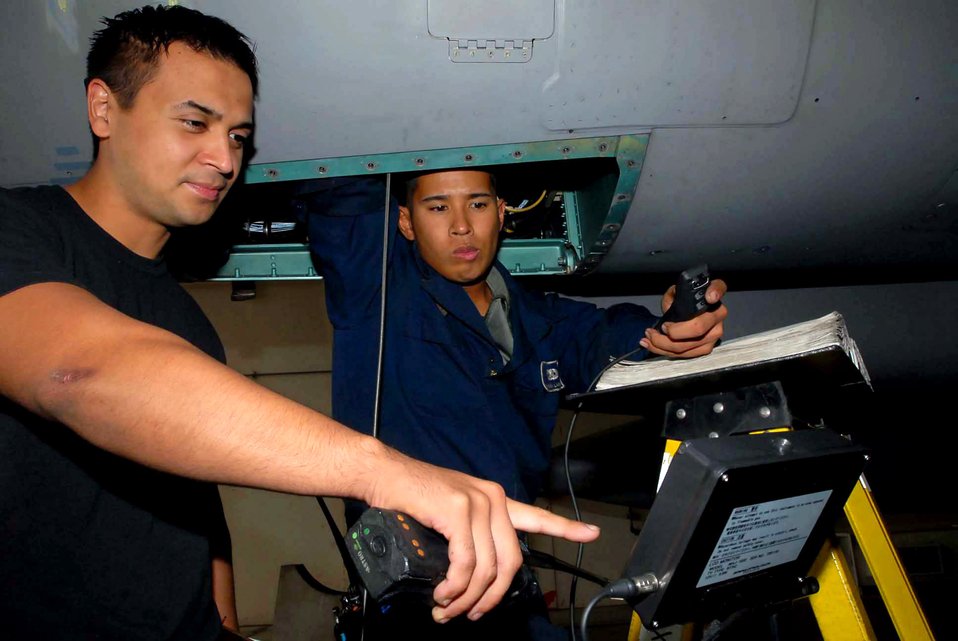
F-15 pilots train to keep talons sharp

Senior Airman Ruben Labrador (left) and Staff Sgt. Martin Ramirez use a fiber optic video scope to look inside inaccessible places in the F-15 Eagle at Kadena Air Base, Japan. Airman Labrador is assigned to the 18th Aircraft Maintenance Squadron, and Sergeant Ramirez works with the 18th Equipment Maintenance Squadron. Maintenance members at Kadena AB continue inspections as part of a fleet-wide F-15 stand-down.